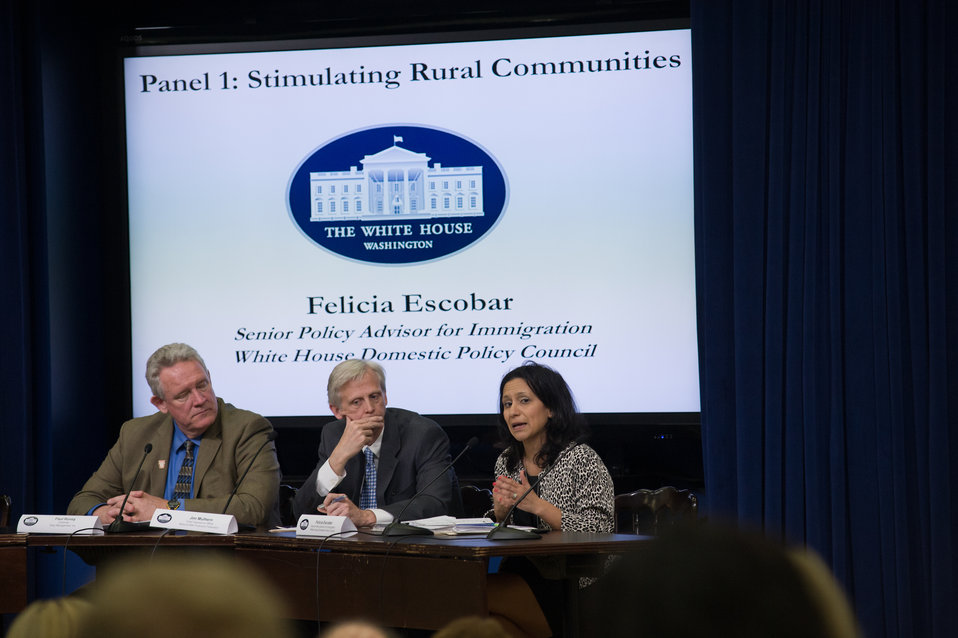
White House Domestic Policy Council Senior Policy Advisor for Immigration Felicia Escobar (right) speaks at the Innovation Center For U.S. Dairy Sustainability Council Meeting on Wednesday, Apr. 24, 2013, at the White House, in Washington, D.CUSDA Photo by Lance Cheung.